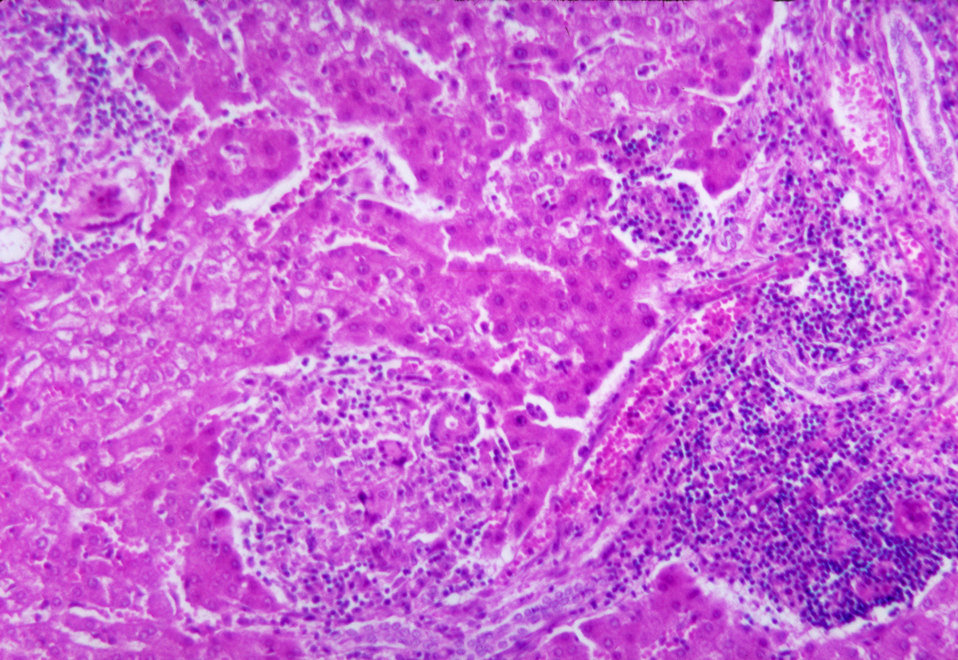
This micrograph depicts histopathologic changes due to cryptococcosis of the liver. Note the presence of numerous granulomas.